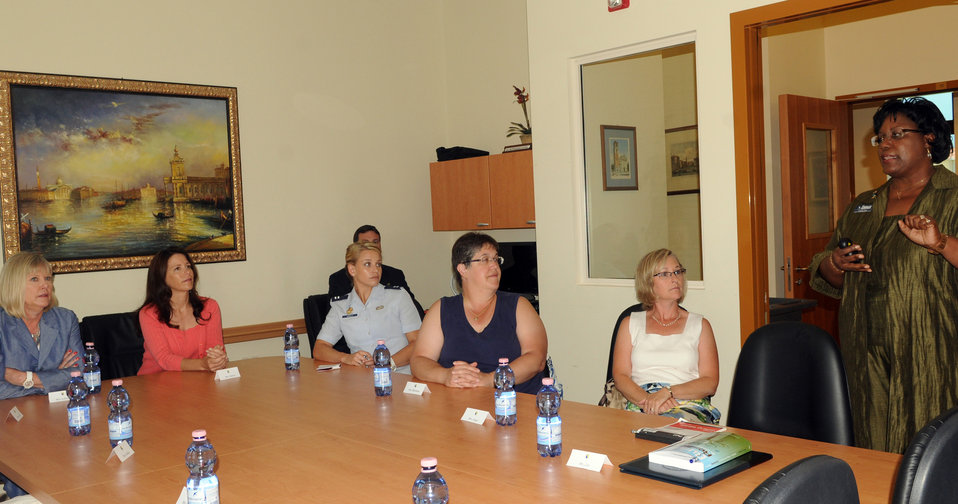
Chief of staff and spouse visit Aviano Air Base

Gwen Lee, the Airman Family Readiness Center director, briefs Suzie Schwartz (left), wife of the Air Force Chief of Staff Gen. Norton Schwartz, July 11, 2011, on various programs for spouses at Aviano Air Base, Italy. The general and his wife were visiting Aviano to meet with Airmen and their families and observe the installation’s mission.